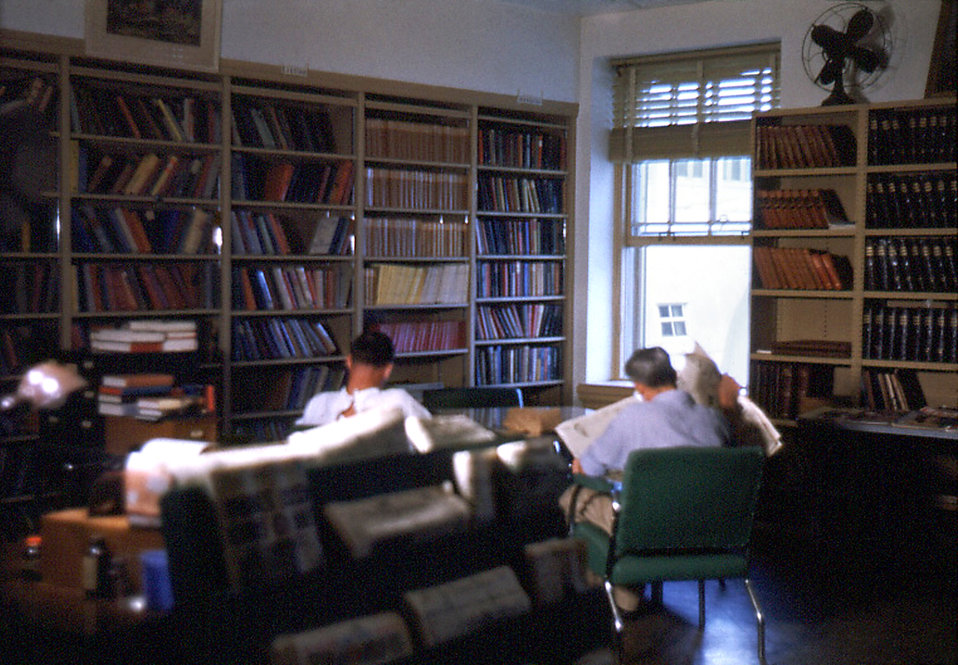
This historic image depicted a typical scene one would encounter in the Carville, Louisiana Leprosarium's library reading room, where patients were able to read newspapers, and choose material from the library's collection of over 10,000 books. Being a self-contained compound, the hospital was equipped with its own power plant, storehouse, patient treatment centers, which included a dental office, food-processing facilities, i.e., a cafeteria, and its own cemetery.The National Hansen's Disease Museum's (NHDM) mission is to collect, preserve and interpret the medical and cultural artifacts of the Carville Historic District. In addition, we want to promote the understanding, identification, and treatment of Hansen's Disease (leprosy). We fulfill this mission by creating and maintaining museum displays, traveling exhibits, publications and a website in order to educate and inform the public on all levels.